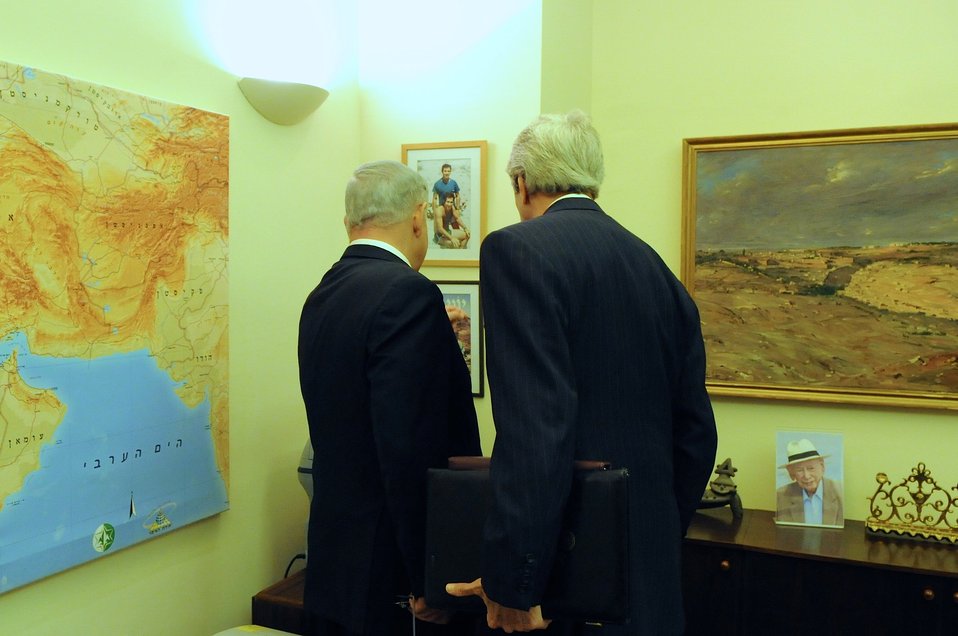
Israeli Prime Minister Netanyahu Shows Secretary Kerry Photos of His Late Brother

Israeli Prime Minister Benjamin Netanyahu shows U.S. Secretary of State John Kerry a pair of photos of his late brother Yonatan 'Yoni' Netanyahu, killed leading the 1976 Operation Entebbe raid, during a tour of his government residence in Jerusalem that preceded a dinner meeting focused on Middle East peace on January 4, 2014.